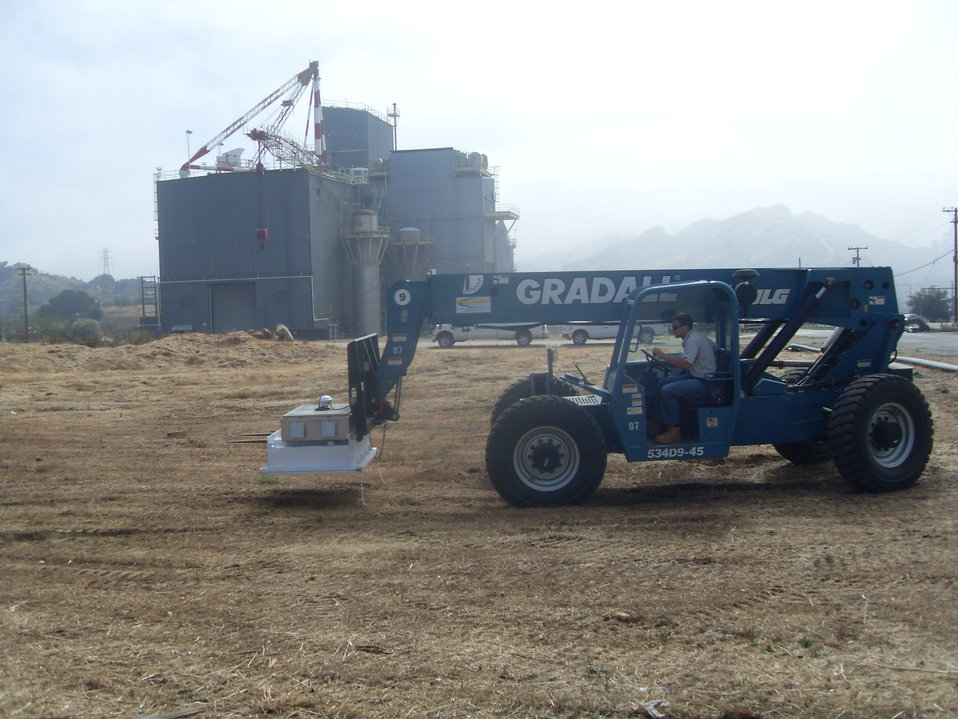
ETEC

Photo taken at the Energy Technology Engineering Center (ETEC).